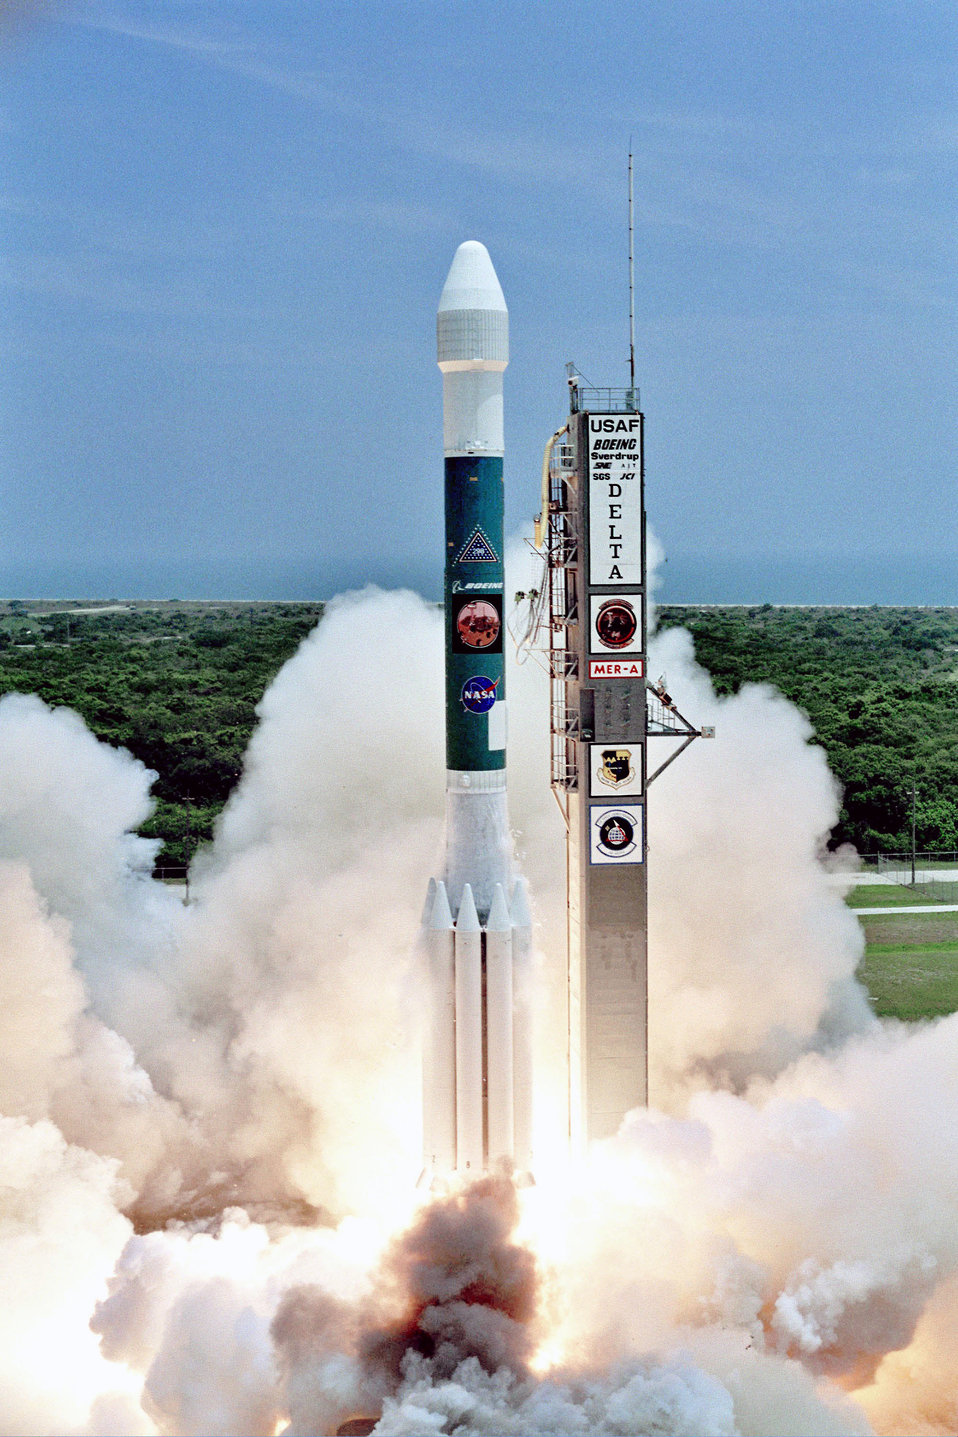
Lift off for Mars

CAPE CANAVERAL AIR FORCE STATION, Fla. (AFPN) -- An Air Force Delta II rocket carrying a Mars rover vehicle lifts off from here June 10. The rover is expected to reach Mars in January.